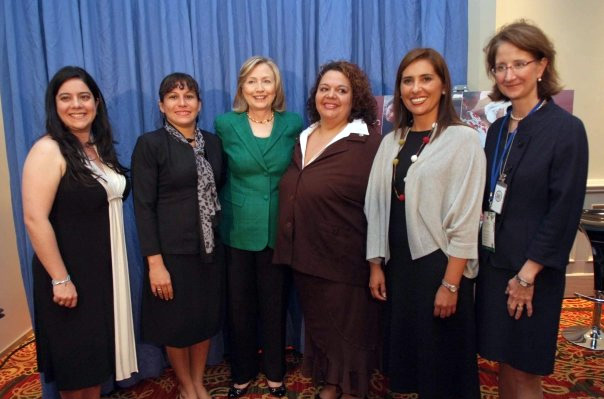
Secretary Clinton With Women Entrepreneurss

U.S. Secretary of State Hillary Rodham Clinton poses with Women Entrepreneurs at the Pathways to Prosperity Conference in San José, Costa Rica, March 4, 2010.